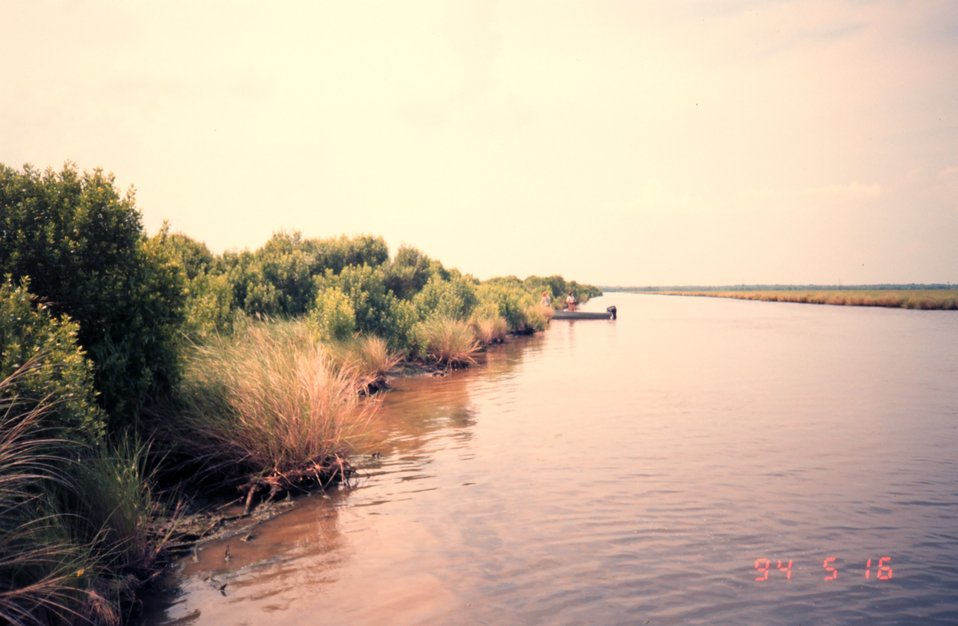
Man-made canal with eroding bank. The cutting of canals often changes the water circulation in marsh systems and can lead to their decline.